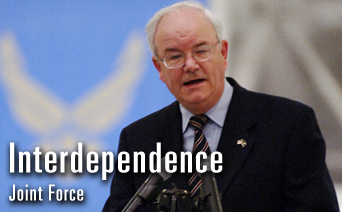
Chief of Staff